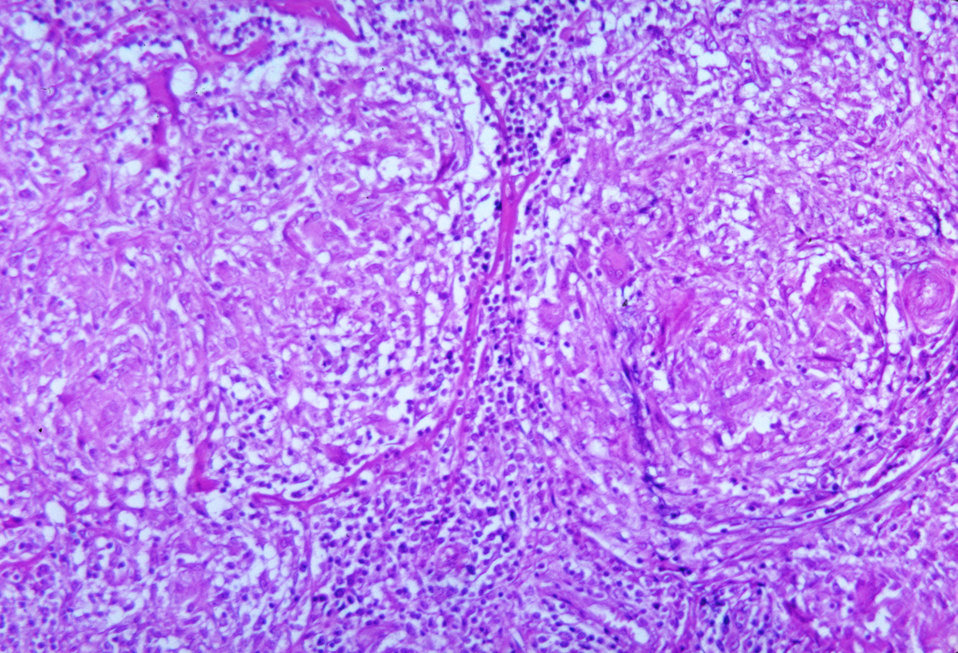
This micrograph depicts the histopathologic changes associated with histoplasmosis of the lung.